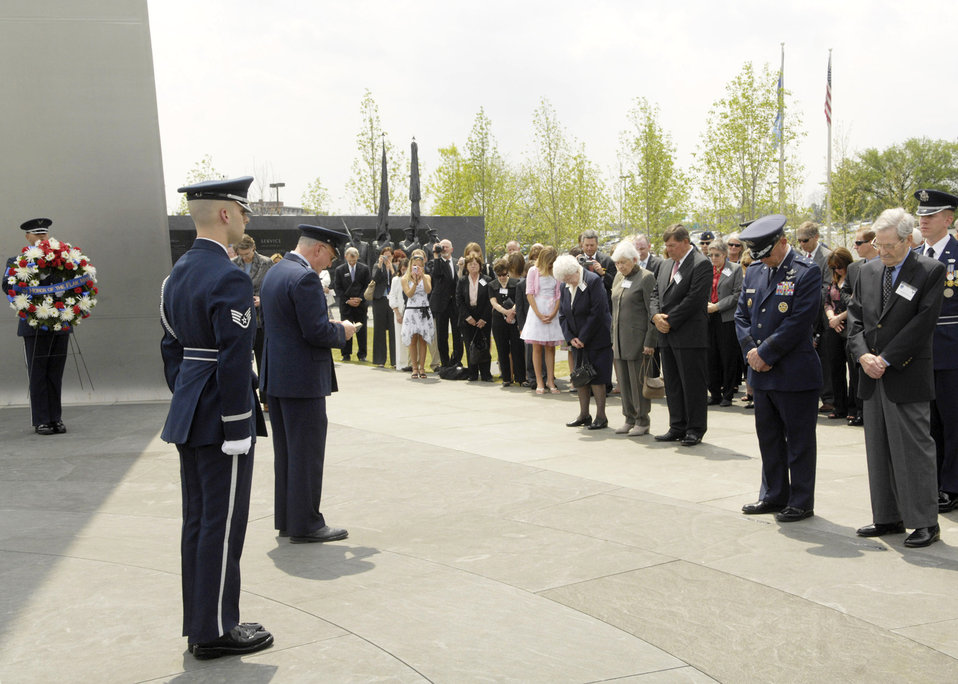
WWII bomber crew awarded Distinguished Flying Cross

A wreath-laying ceremony in honor of the